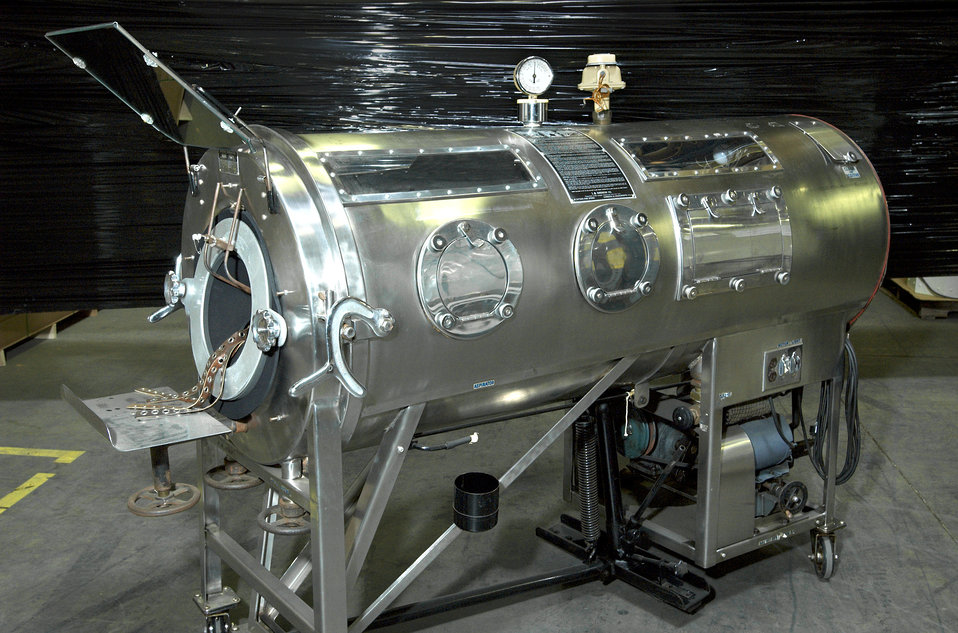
Made of stainless steel, and still in good working order, this Emerson Respirator, also known as an 'iron lung', was used by polio patients whose ability to breath was paralyzed due to this crippling viral disease.